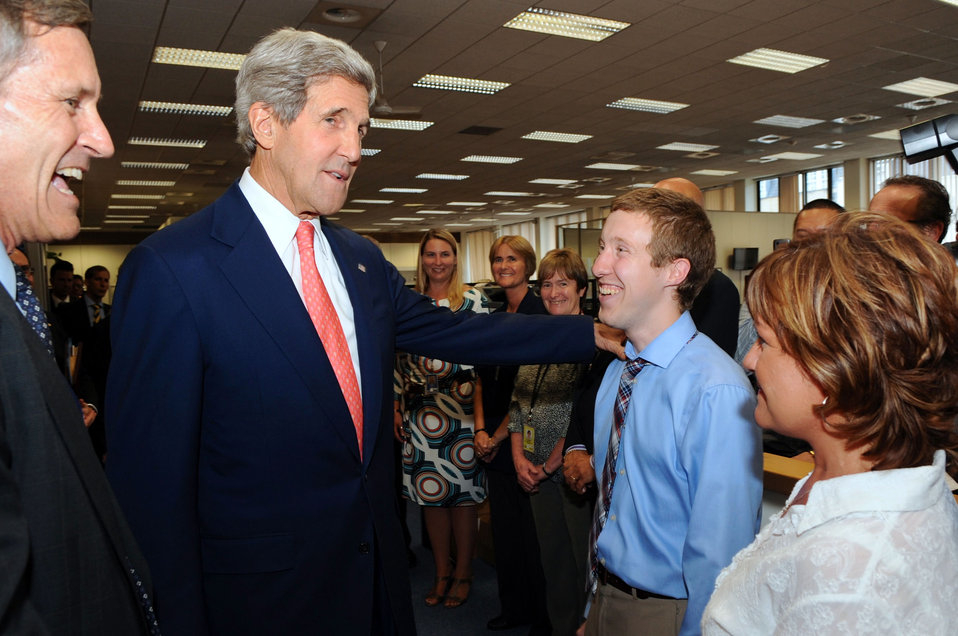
Secretary Kerry Greets a Summer Intern

U.S. Secretary of State John Kerry greets Eric Smith, a summer intern from the University of Massachusetts Amherst, the flagship public school in his home state, during a visit to the U.S. Embassy in London, United Kingdom, on August 2, 2013.